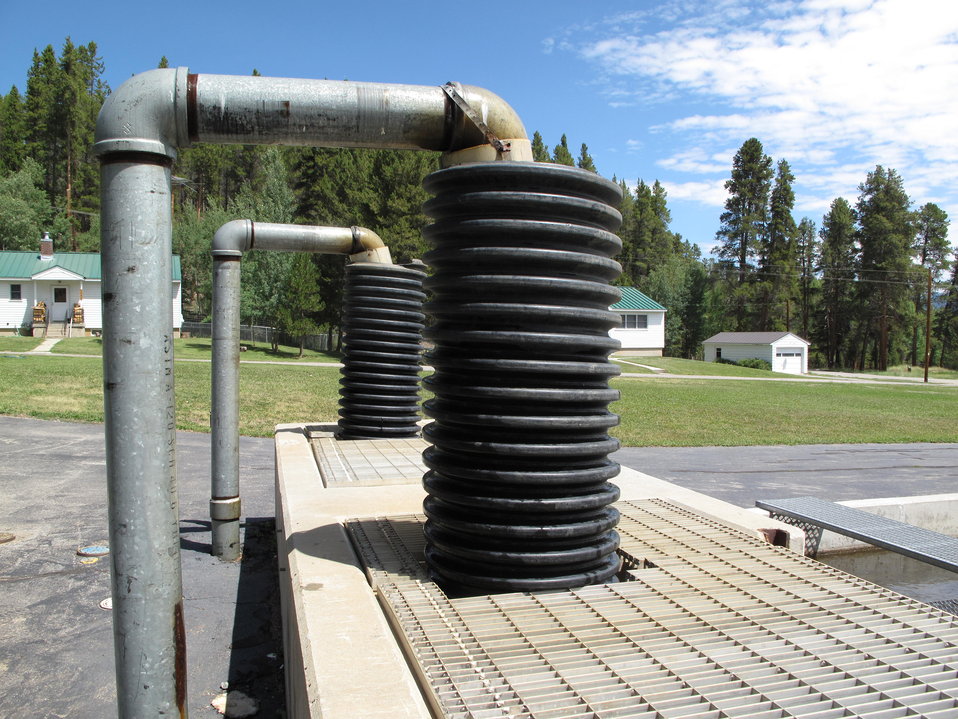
Leadville National Fish Hatchery

These are the outside water agitators, which pump water into the outdoor raceways.